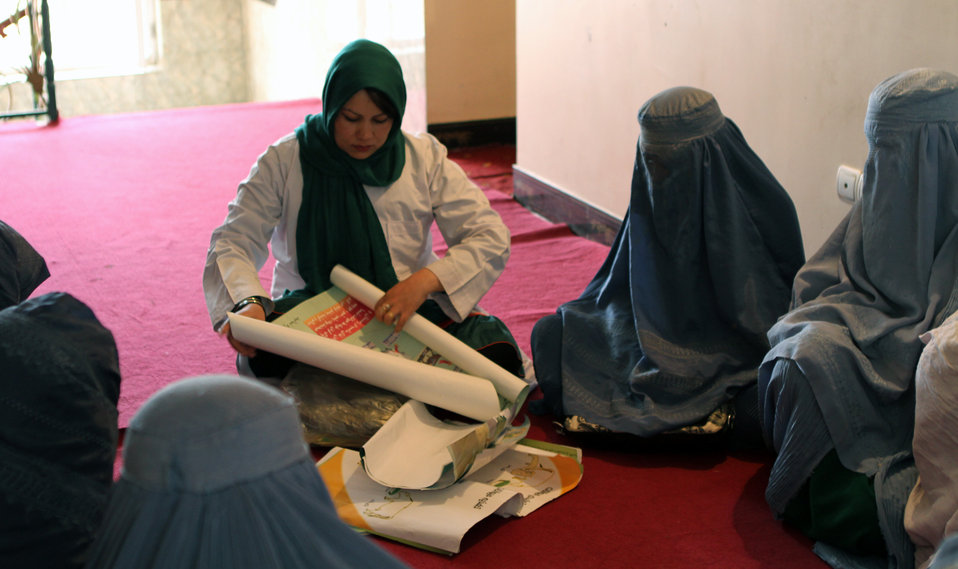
Development of Veterinary...